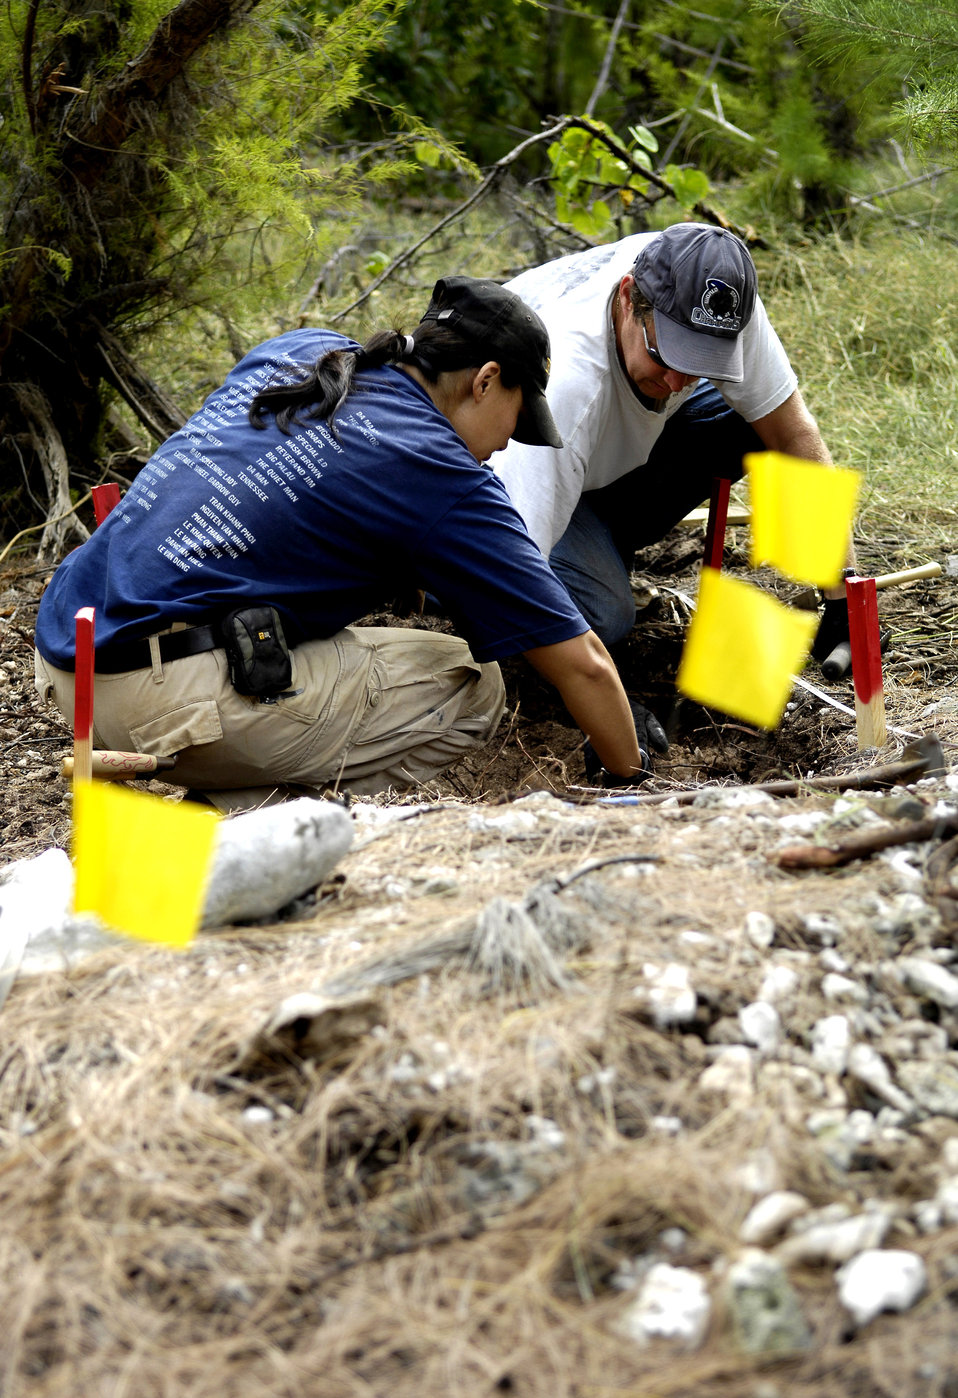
Servicemembers search for POW/MIAs on Wake Island

Greg Berg and Denise To excavate a dig site Jan. 12, 2008 on Wake Island. Mr. Greg and Ms. To, forensic anthropologists, were sent to do a site survey after Wake Island officials notified the Joint POW/MIA Accounting Command of bones located on the island. JPAC officials are charged with achieving the fullest possible accounting of all Americans missing as a result of past conflicts.